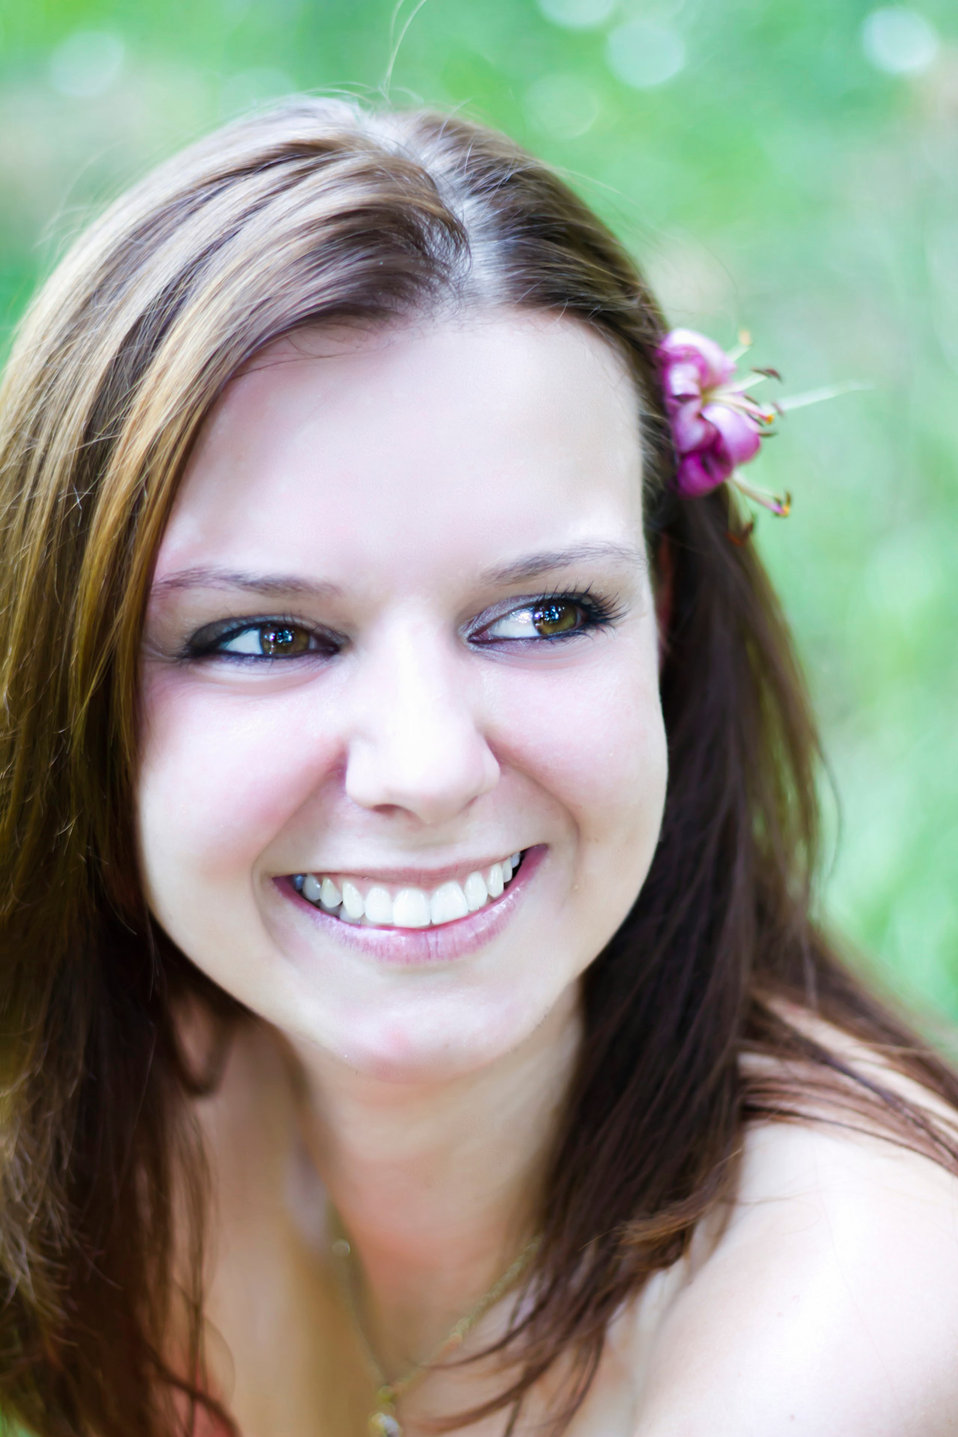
Pretty young girl.